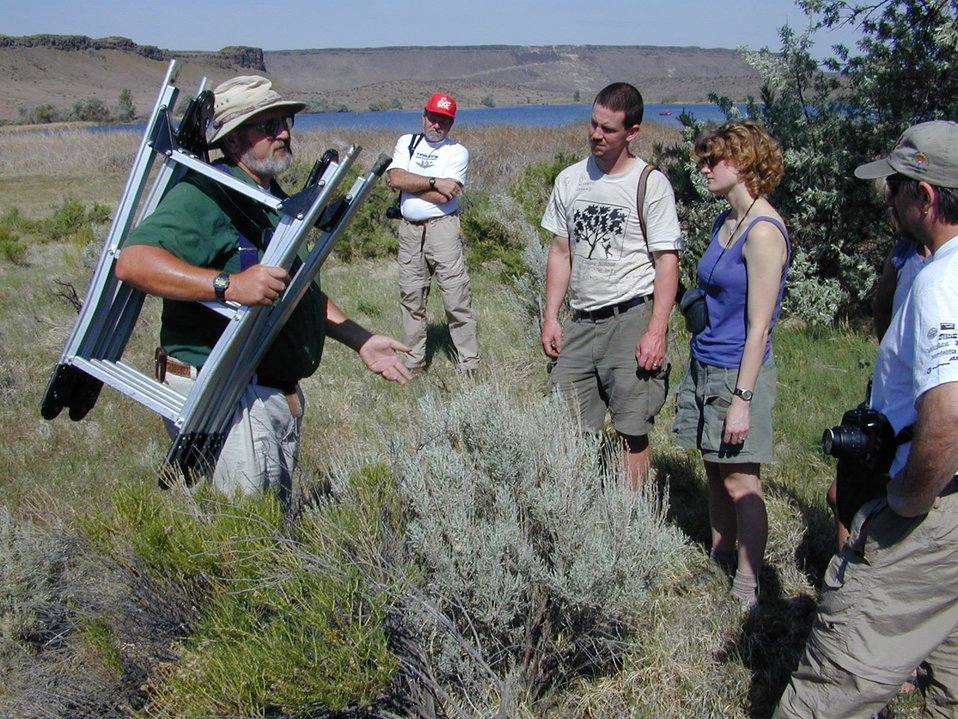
Environmental Education Fire Workshop Timberline High School Fall 2000